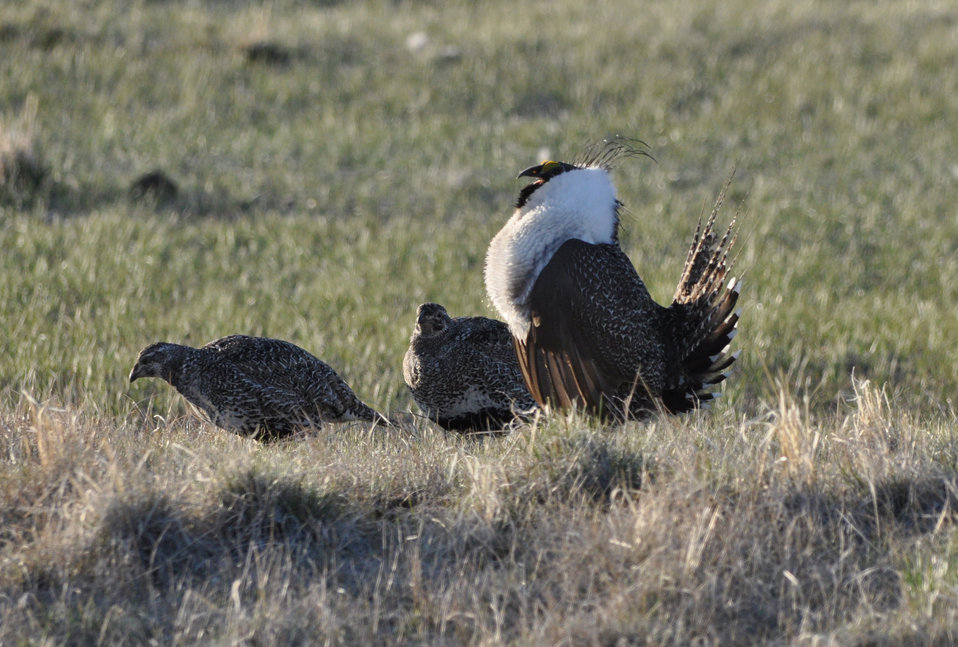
Photo Credit: Jeannie Stafford/USFWS
A greater sage-grouse male struts for a female at a lek (dancing or mating ground) near Bridgeport, CA.